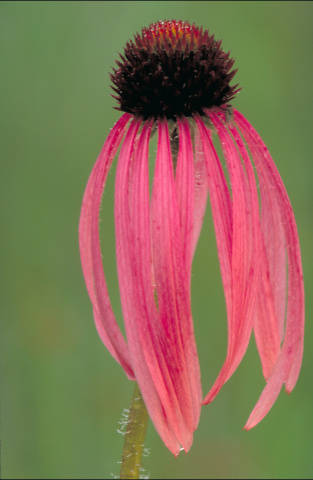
narrow leaved coneflower